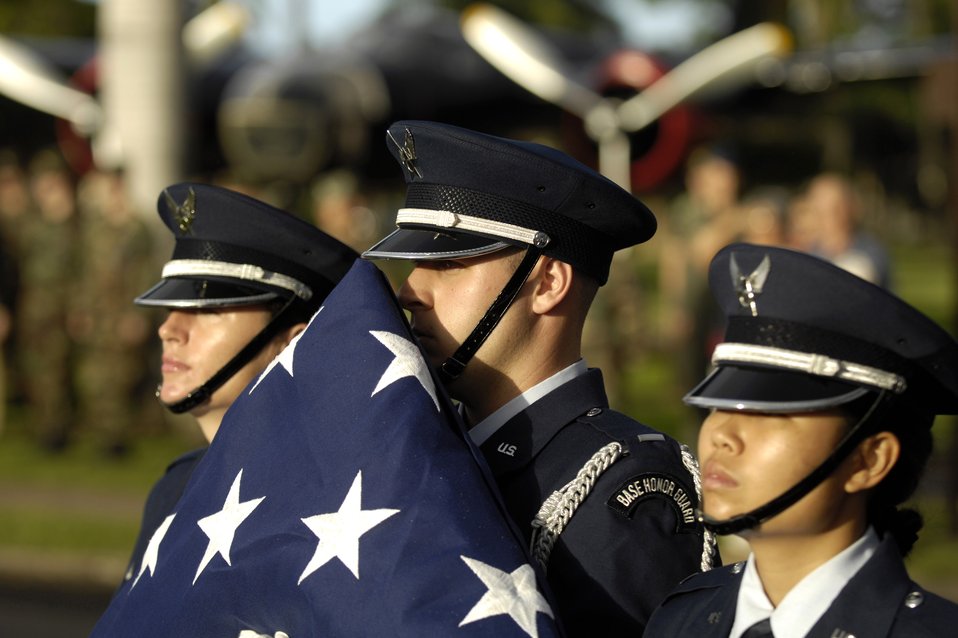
Remembering the Pearl Harbor attack

A ceremony at the Hickam Air Force Base, Hawaii, flagpole was held Dec. 7 to honor the 189 who died and 303 who were wounded during a surprise attack by Japanese fighter aircraft 65 years ago.